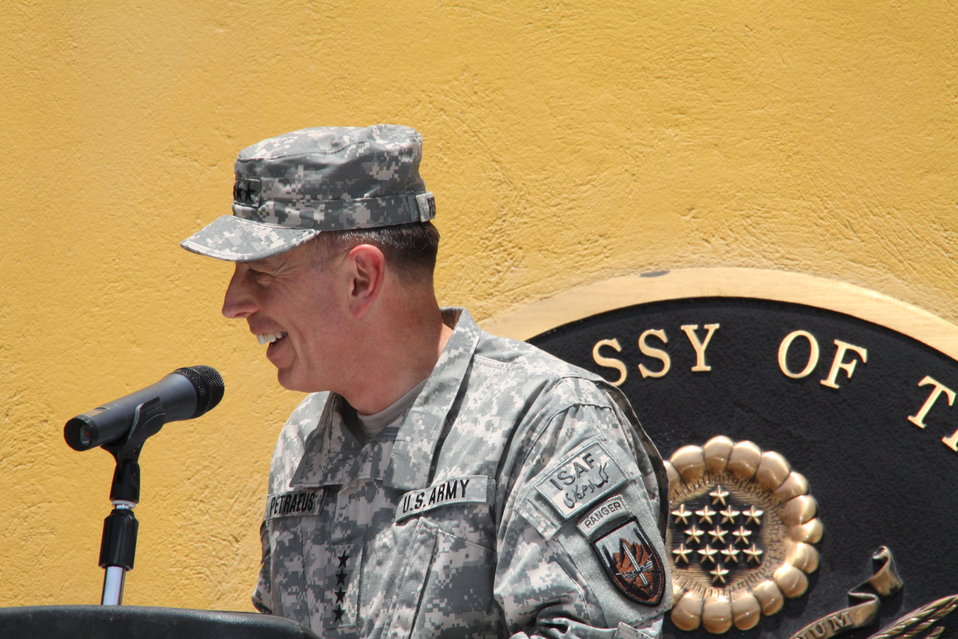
Kabul Official July 4th Celebration